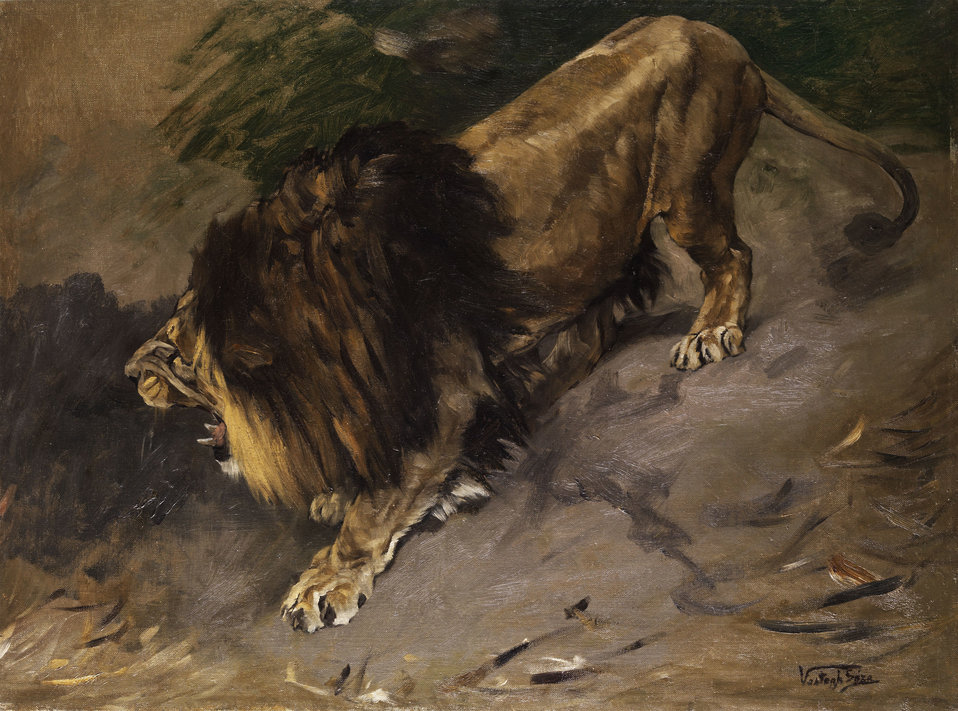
Deutsch: Brüllender Löwe. Öl auf Leinwand. 77 x 104 cm.